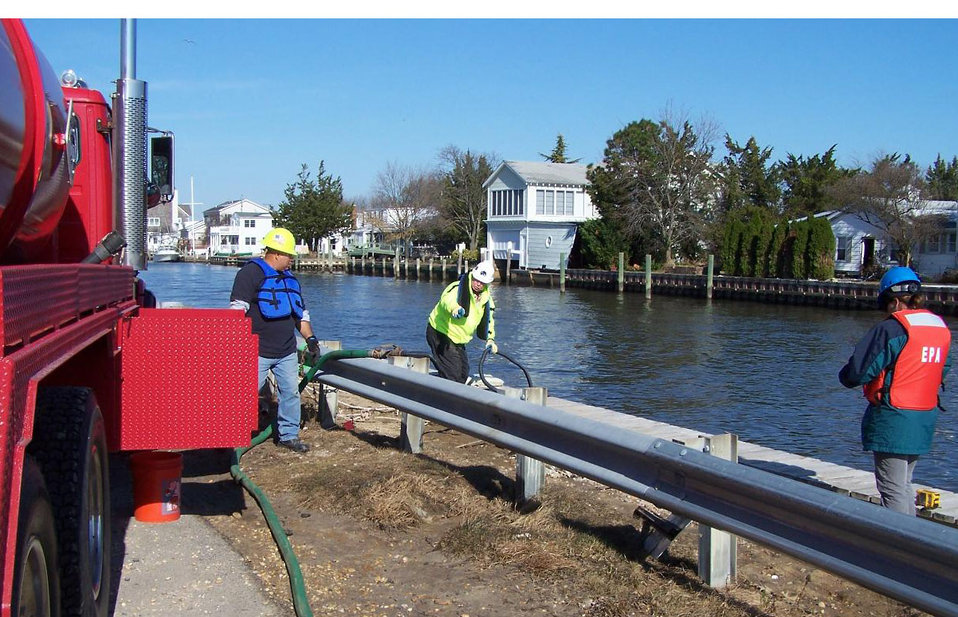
Vacuum Truck in Tom's River, NJ

A vacuum truck is being used to pump out a diesel fuel tank in Tom's River, NJ.